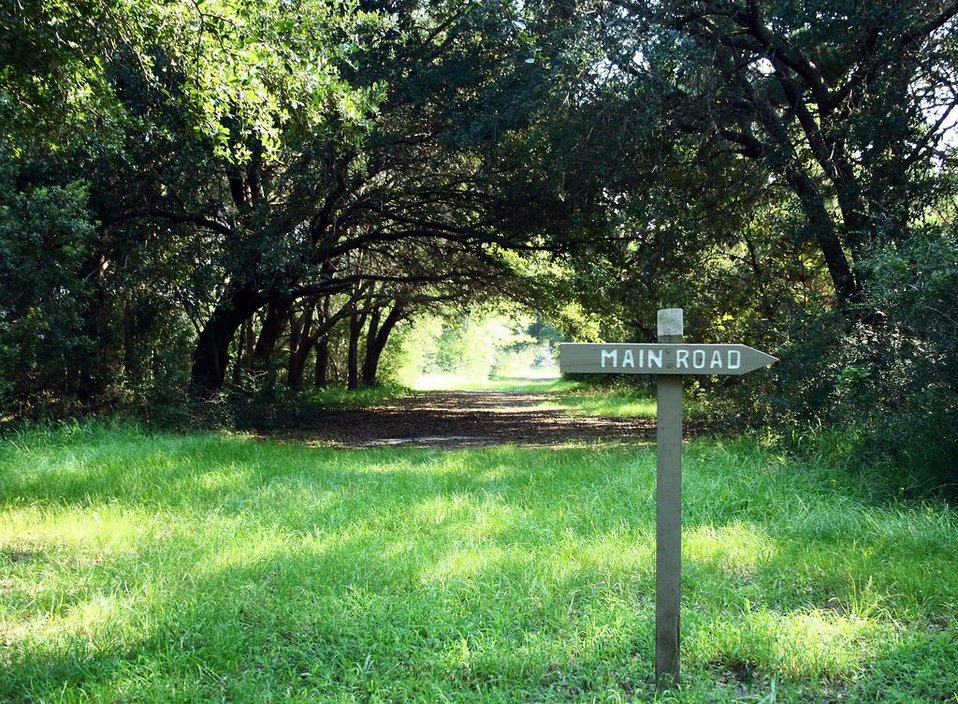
Pinckney Island Trails

Pinckney Island National Wildlife Refuge, South Carolina.